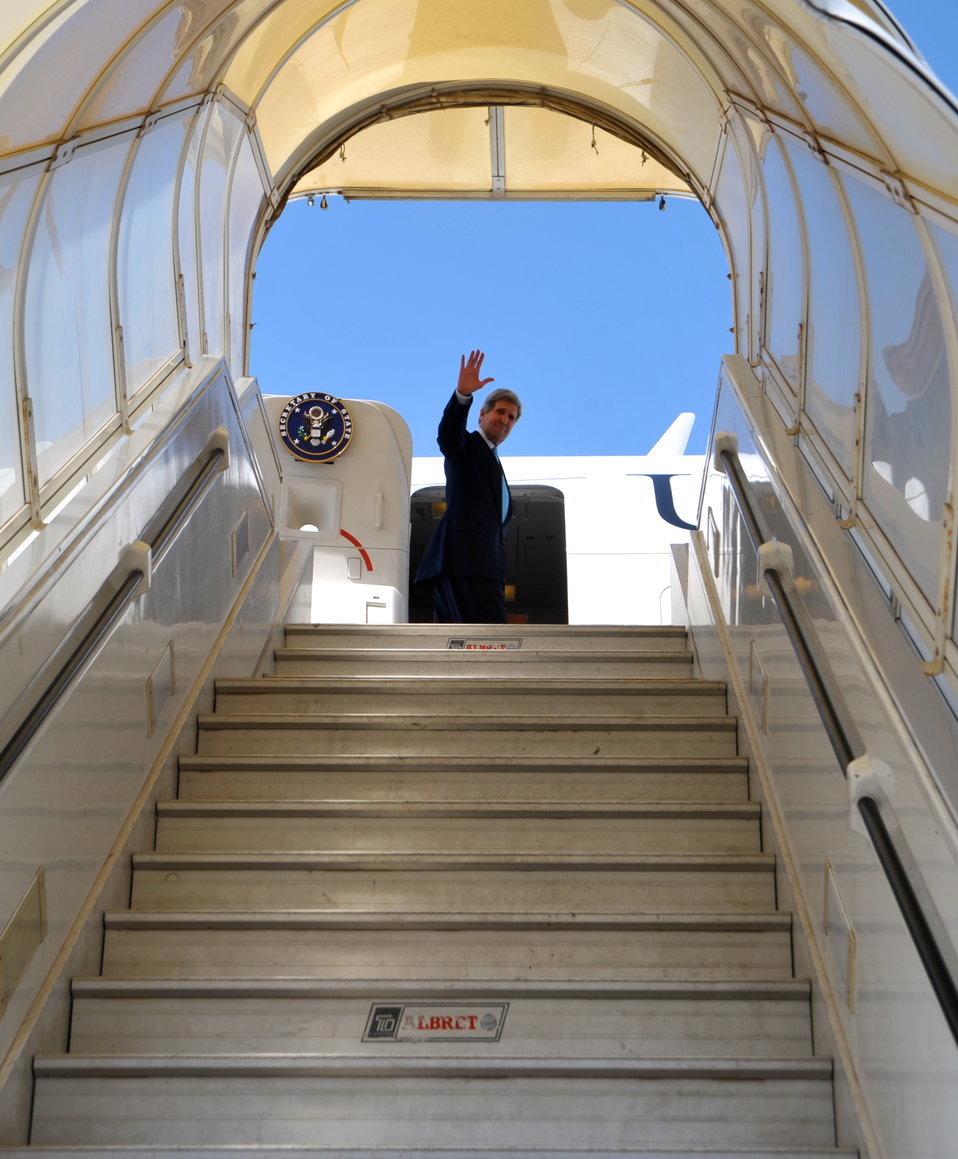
Secretary Kerry Bids Farewell to Israel

U.S. Secretary of State John Kerry waves goodbye as he boards his U.S. Air Force jet in Tel Aviv, Israel, for a flight to Bandar Seri Begawan, Brunei, on June 30, 2013.